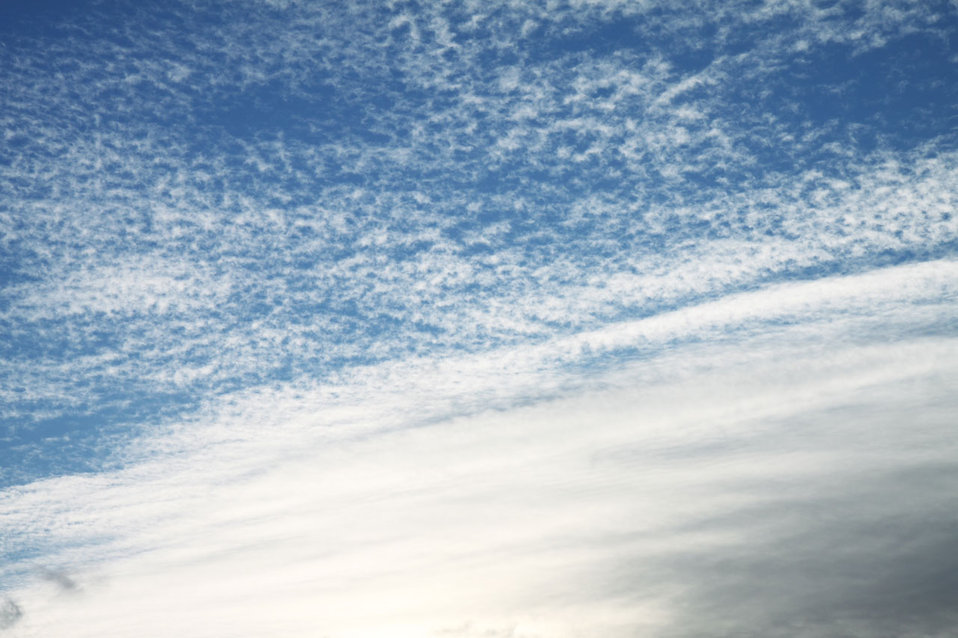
Sky with clouds

Blue sky with a big cloud.